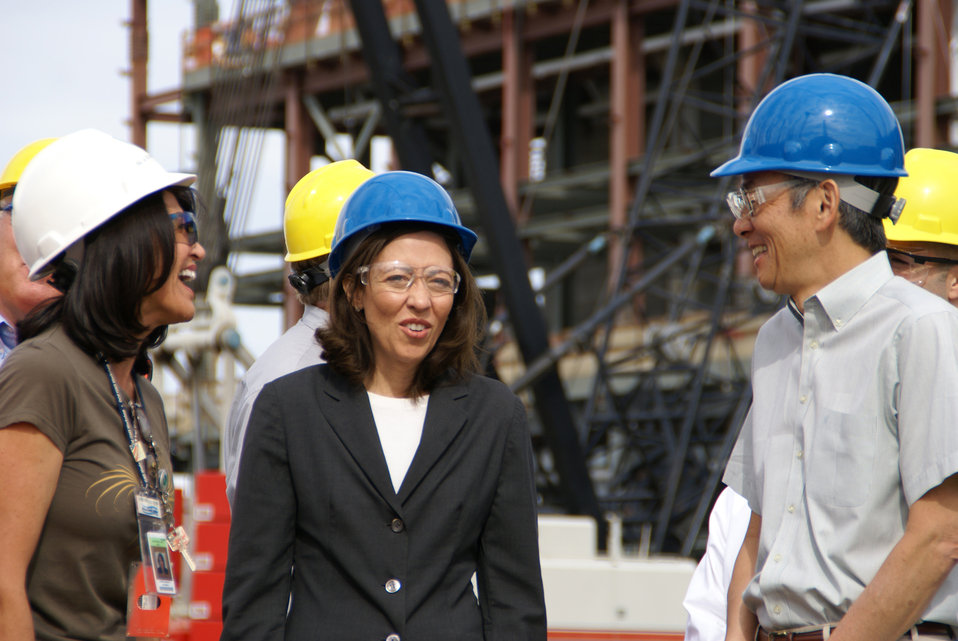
SECRETARY CHU VISIT TO VIT PLANT 2009 WITH PATTY MURRAY

DOE Secretary Chu visits with Washington Senator, Maria Cantwell, during a tour of the Waste Treatment Plant.